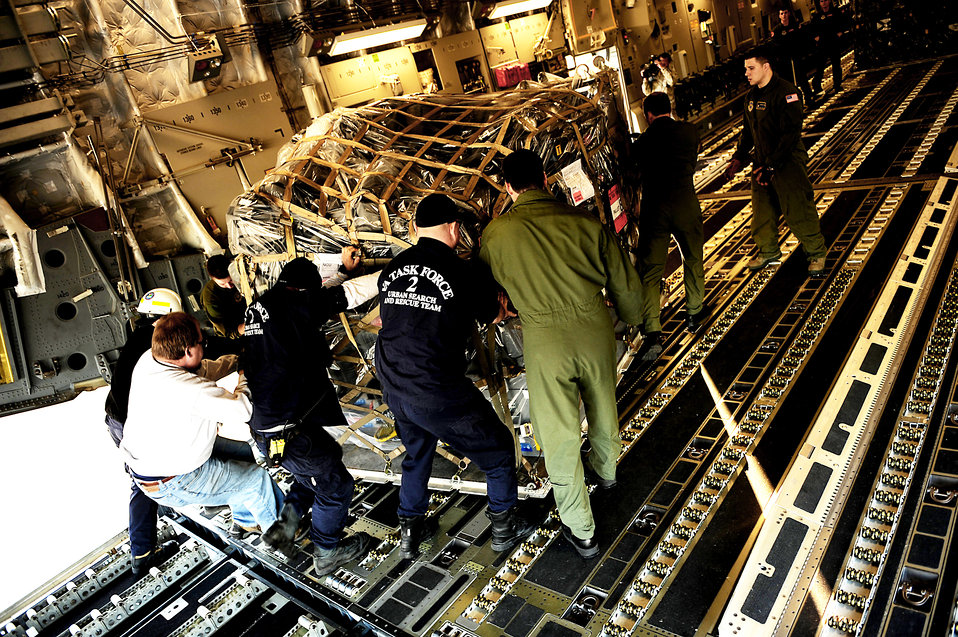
Haiti Earthquake Relief

Members from the Virginia Task Force 2 Urban Search and Rescue team and crew from the 21st Airlift Squadron at Travis Air Force Base, Calif., load their plane with Haitian earthquake relief supplies Jan. 15, 2010, at Norfolk, Va.